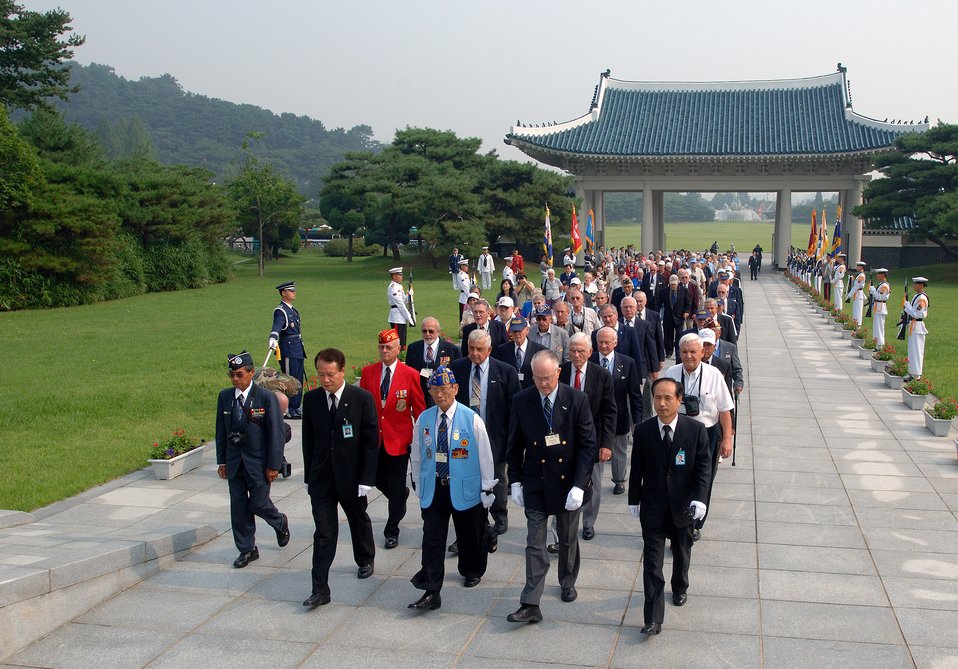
Korean War veterans give sage advice to Airmen

Retired Maj. Gen. Carl G. Schneider and retired Philippines Gen. Vic Azada lead more than 200 Korean War veterans for a wreath-laying ceremony at the South Korean National Cemetery along with fellow Korean War veterans Sept. 12. The South Korean government's Revisit Korea program invites war veterans each year to come to South Korea to honor the men and woman from 21 countries who served during the Korean War. Nearly 25,000 veterans have participated in this program since 1975.